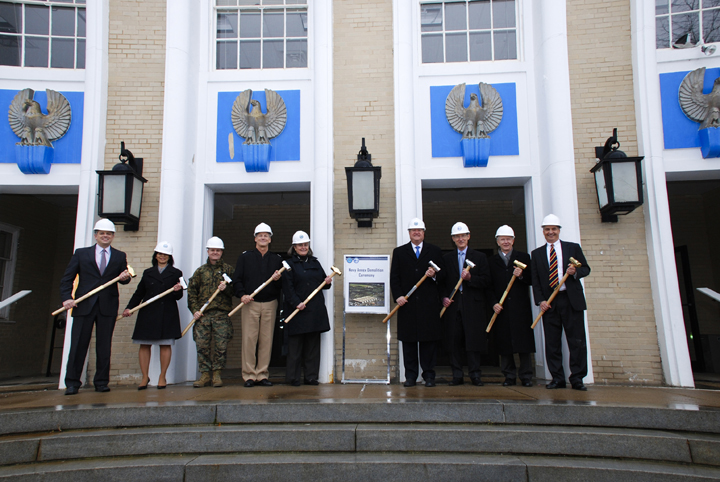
SecAF commemorates Navy Annex history

Department of Defense senior leaders attended a ceremony to commemorate the history of the Navy Annex building by Arlington National Cemetery and the Air Force Memorial and mark the start of its demolition process. Pictured, left to right, are Michael Rhodes, director of Administration and Management; Joan Hughes, director, Operations Directorate, Office of the Department of the Navy Assistant for Administration; Col. Aaron Amey, assistant chief of staff for Logistics for the Marine Corps Installations Command; Rear Admiral Robert Thomas, chief of staff, J5, The Joint Staff; Kathryn Condon, executive director of Army National Cemeteries Program, Michael Donley, secretary of the Air Force; Thomas Hawley, deputy under secretary of the Army; Steven Redmann, executive director, U.S. Army Headquarters Services, Office of the Administrative Assistant to the Secretary of the Army. In accordance with the fiscal year 2000 Defense Authorization Act, 42 acres of land will be transferred to the Department of the Army for future use by the cemetery. The 70 year-old annex building was originally built as a warehouse in 1941 and has housed Marine Corps headquarters and many Navy offices through the years.